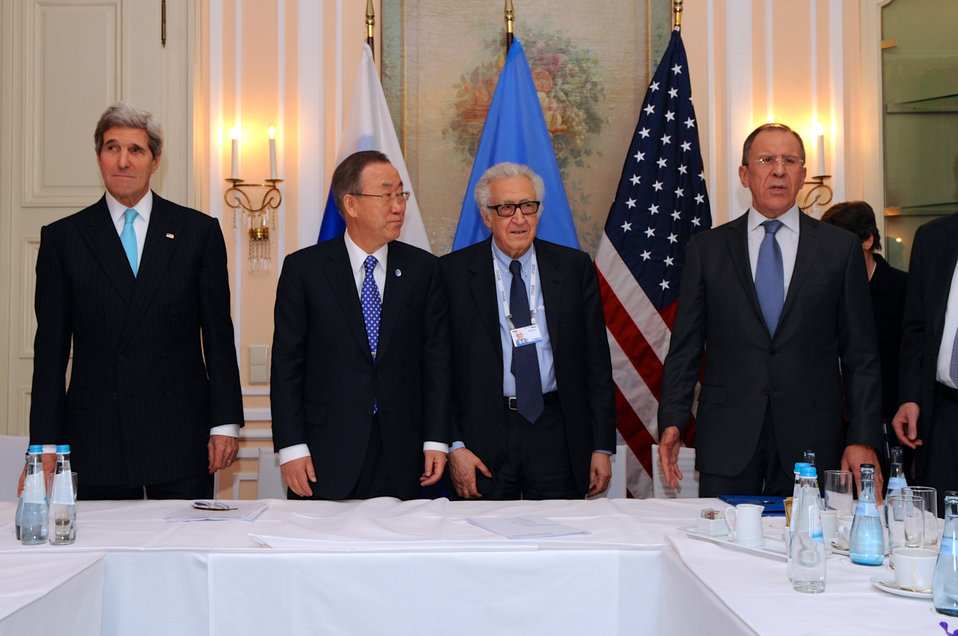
Secretary Kerry, UN Secretary-General Ban Ki-moon, UN Special Representative Brahimi, and Russian Foreign Minister Lavrov Before a Trilateral Meeting

U.S. Secretary of State John Kerry and Russian Foreign Minister Sergey Lavrov flank United Nations Secretary-General Ban Ki-moon and U.N. Special Representative for Syria Lakhdar Brahimi before a trilateral meeting on the sidelines of the Munich Security Conference in Germany on January 31, 2014.